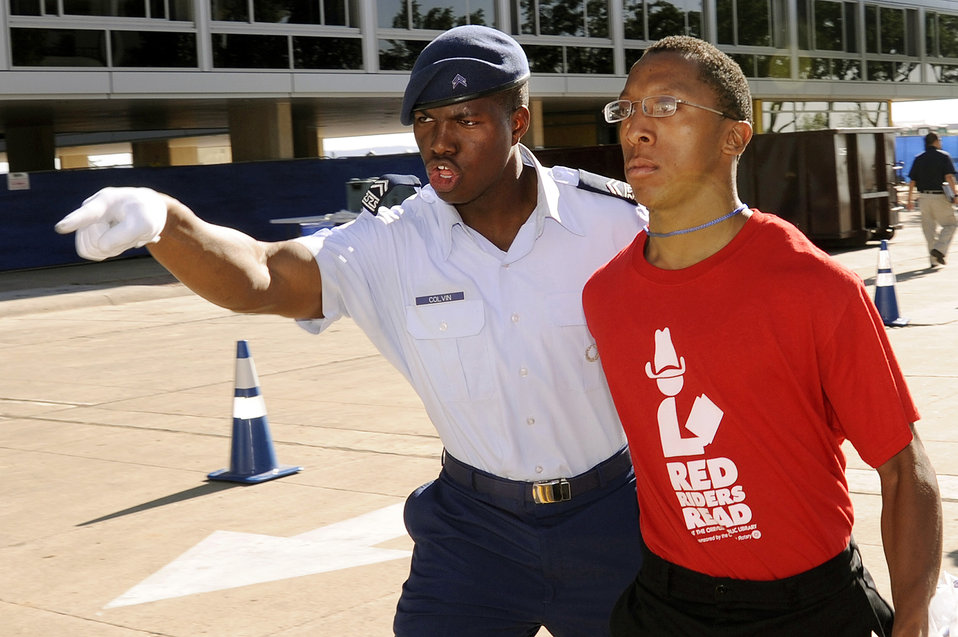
Class of 2014 joins long blue line

Cadet 2nd Class James Colvin motivates Basic Cadet Michael Craig to move quickly during class of 2014 inprocessing June 24, 2010, at the U.S. Air Force Academy, Colo. Basic Cadet Training begins June 25 and continues through July 31, 2010. The class of 2014's first day of classes is Aug. 7.